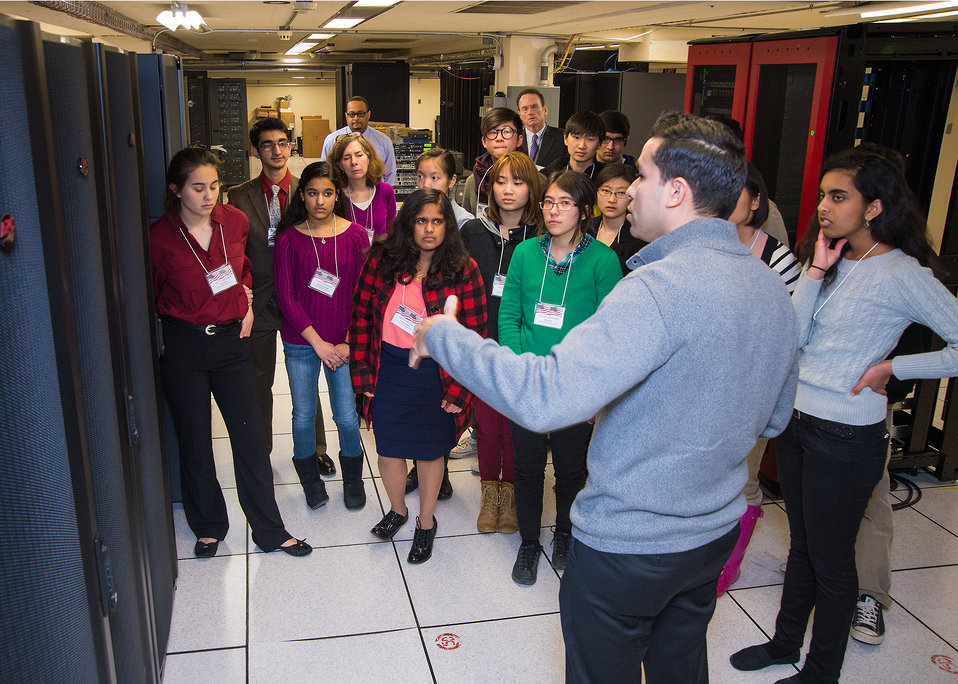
Students from Thomas Jefferson High School of Science and Technology in Alexandria, VA were able to tour the United States Department of Agriculture Information Technology Center during the U.S. Department of Agriculture (USDA), Office of the Chief Information Officer (OCIO) IT Job Shadow Day, Tuesday, Mar. 25, 2014. The OCIO IT Job Shadow Day hosts students from local high schools in the Washington, D.C. area annually with IT professionals and agricultural specialists from a variety of mission areas at USDA.